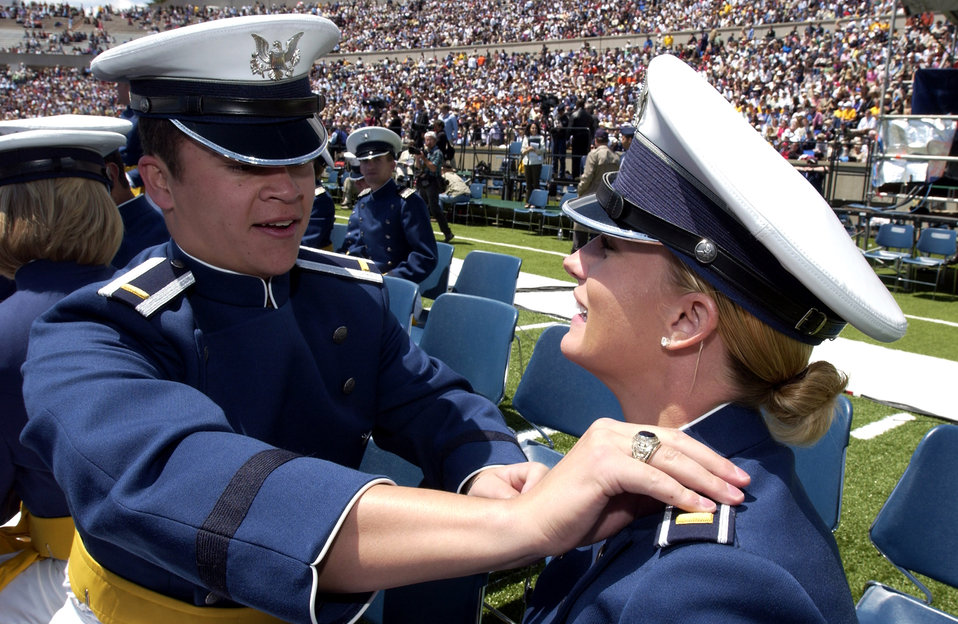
'Stay true' SECDEF tells Air Force Academy grads

Newly minted 2nd Lt. David Drennan pins second lieutenant bars on Catlin Butterfield during the 2007 U.S. Air Force Academy graduation ceremony May 30 in Colorado Springs, Colo.